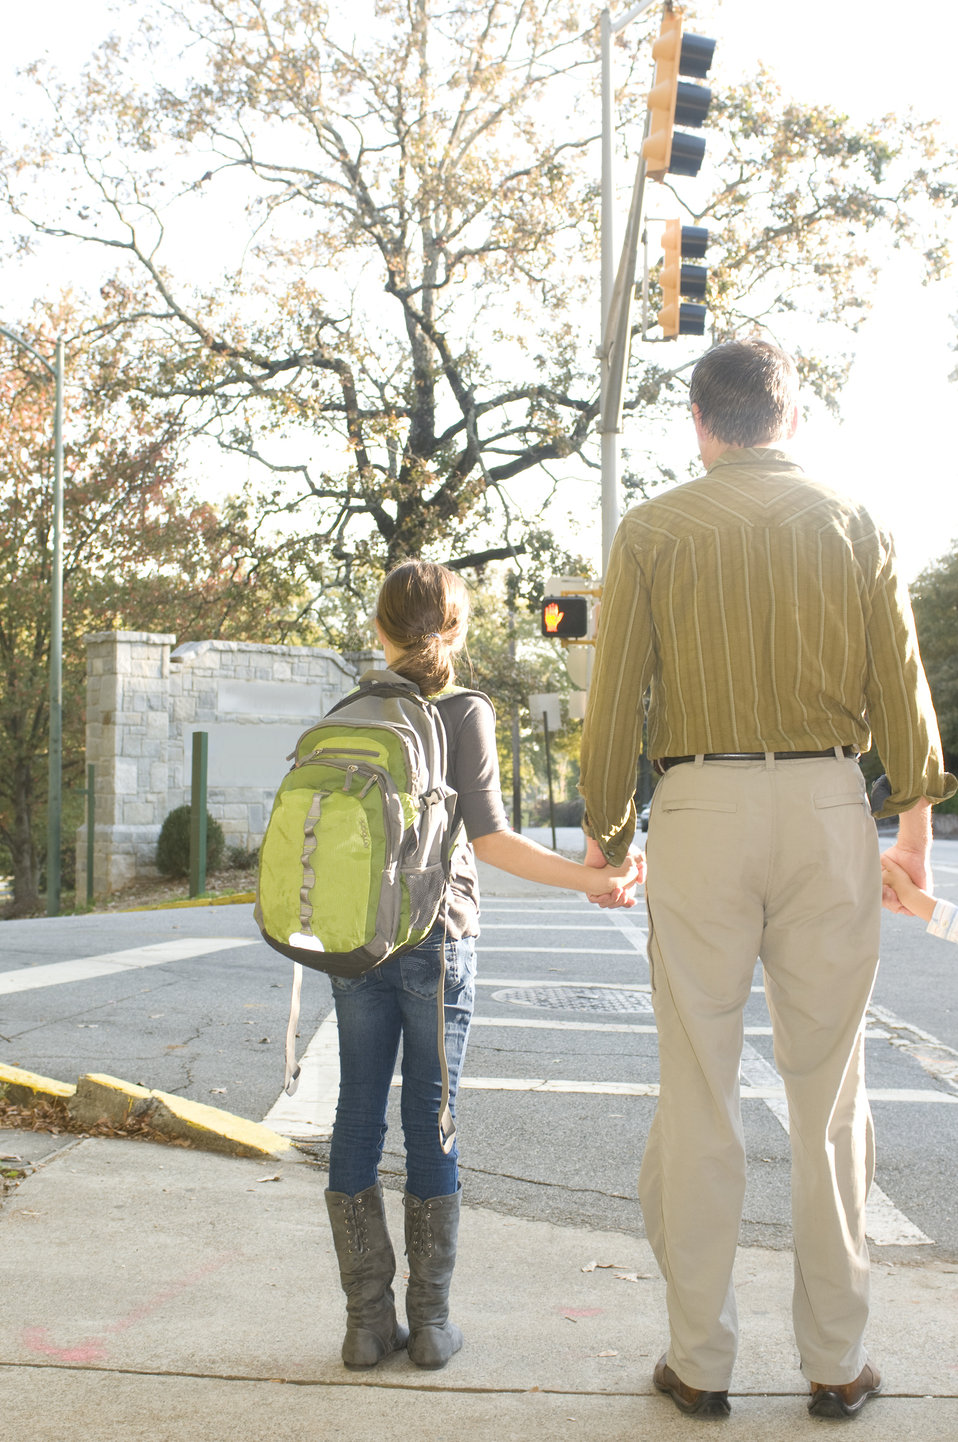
This father was shown walking on a Georgian city street, while to his right, he was holding hands with his young daughter. They had paused at an intersection while waiting for the crosswalk signal to indicate permission to cross the street. Adherence to the rules and regulations governing our roadways, as well as staying alert and focused on the activities taking place all around you, will make for a much safer walking experience, especially on a city street.